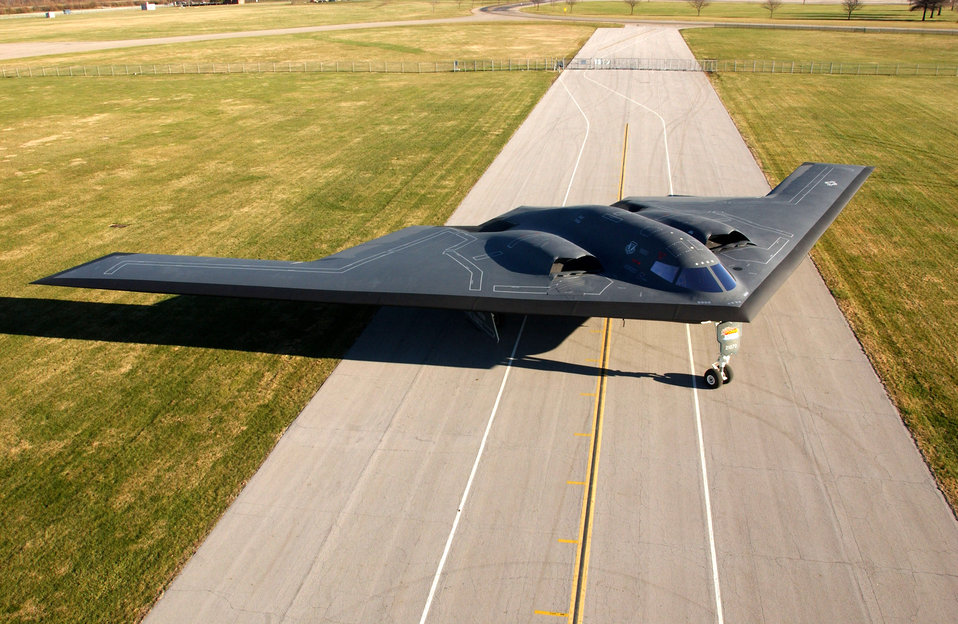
Spirit on the move

FILE PHOTO -- The B-2 Spirit is a multi-role bomber capable of delivering both conventional and nuclear munitions. The B-2 brings massive firepower to bear, in a short time, anywhere on the globe through previously impenetrable defenses.